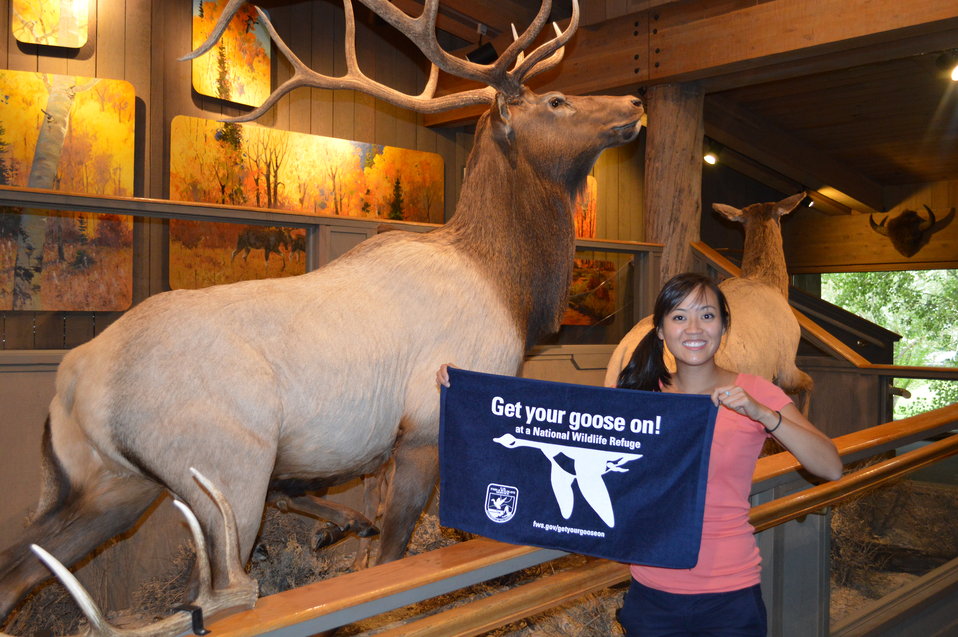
Get Your Goose On! - National Elk Refuge Style

On August 10, 2012 the U.S. Fish and Wildlife Service and Partners celebrated the 100 year anniversary of the establishment of the National Elk Refuge. In these photos, young attendees, along with Puddles the Blue Goose and the National Elk Refuge's mascot, showed us how to Get Your Goose On! with style.